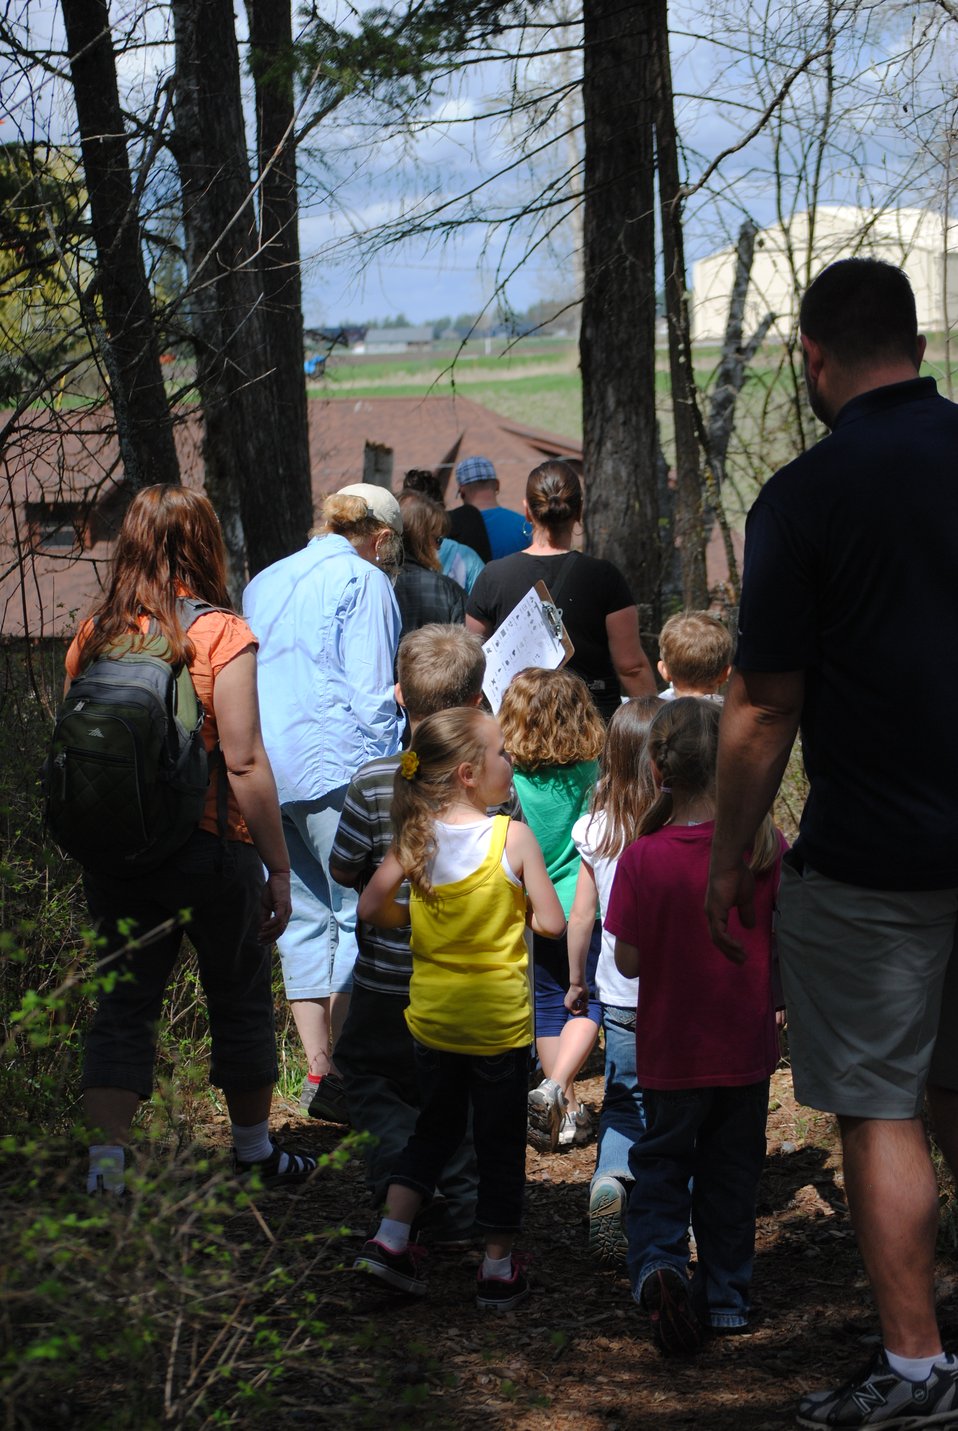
Creston National Fish Hatchery Education Programs

Creston National Fish Hatchery's Nature Trail has thirteen signs along the trail that correspond to a brochure at the trailheads.

For Flathead Valley Educators and Families this Nature Trail helps to increase knowledge of the natural world around us. Informational signs are: Wildflowers not Weeds, Why do Hacheries Raise Fish, Deer Trails - Nature's Highways, Habitats-Aquatic-Forest-Riparian, Protecting Water Quality, Pollinators, Birds - Can you Hear Them Sing?, Historical Land - Jessup,Leave no Trace, Do Insects Bug You?, and the Class Room by the Creek (amphitheatere).